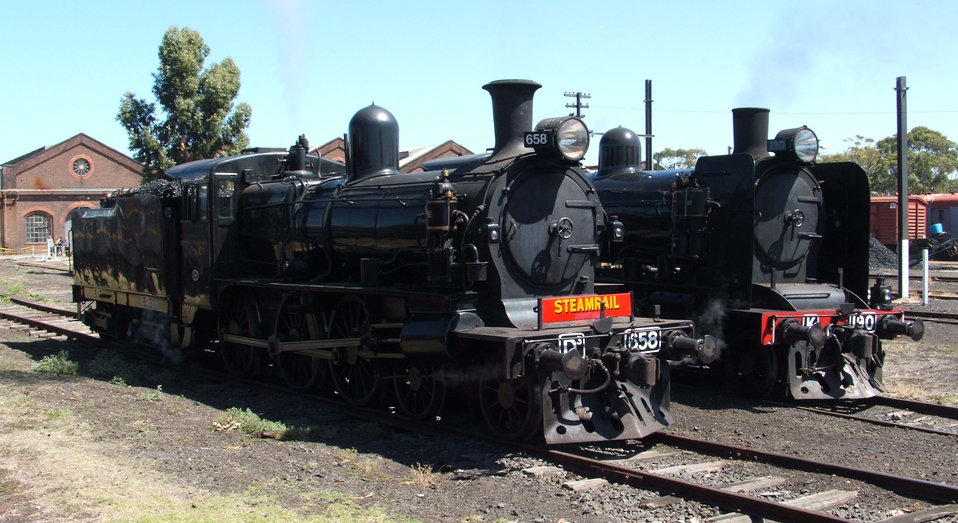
Victorian Railways D3 class 4-6-0 and K class 2-8-0, Newport Worshops, Victoria, Australia, 10 March 2007